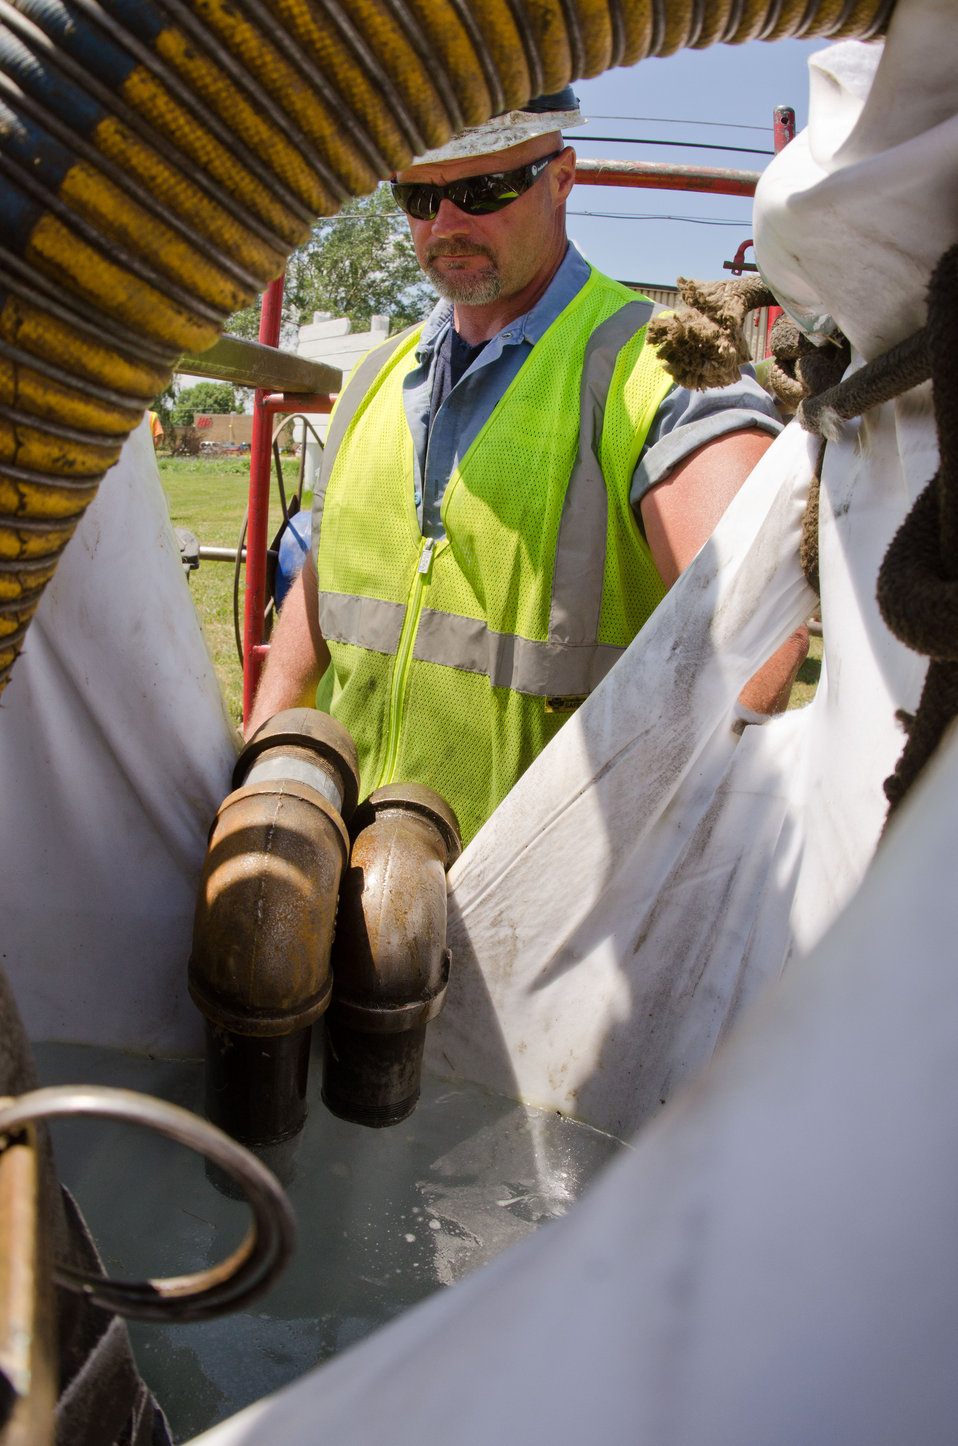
Insituform’s Mack Meher checks the water flow that fills the white resin impregnated fabric lining that goes down the manhole here, and through the existing 50 year old sanitary sewer pipe, to the next manhole, on Tuesday, July 19, 2011; part of Buena Vista Township Phase II Sewer Project, in Michigan, where the United States Department of Agriculture funded the refurbishment and rehabilitation of 45,500 linear feet of defective sewer pipe, and more than 200 manholes; on Tuesday, July 19, 2011. The project includes the construction of an off-site excess flow basin; construction of a pump station; and improvements at the wastewater treatment plant. The system will serve 2,349 residential and 177 commercial customers and will bring the township into compliance with environmental regulations regarding pollutant discharges.
Inspections revealed that the 1960s sanitary sewer system had inflow from storm and rainwater systems and overflowed into the sanitary sewer system. Infiltration was found in the form of cracks, and other failures that allowed groundwater to enter. Rather than digging up the old system, rehabilitation with a cured-in-place-pipe (CIPP) method was chosen. This provides up to a 50% savings and the liner is projected to last 50-100 years. CIPP repair of the 8-30” diameter pipes involves pulling a resin-saturated fabric liner through a damaged pipe, which is then cured with steam or hot water to form a tight-fitting, joint less replacement pipe. Trenchless repair methods require less digging than traditional “dig and replace” repair methods and minimize damage to yards and landscaping. There are two of these teams and one manhole rehabilitation to seal the underground casting frame or brick structure. They process 600-800 feet per day.
Wade Trim Inc. Professional Engineer Tiffany Harrison said about working with the United States Department of Agriculture’s Rural Development “It was very easy, they make it very straight forward, in what paperwork they need. They were always available for questions.
USDA Rural Development has funded water and sewer projects in 117 Michigan communities serving more than 94,000 customers.
Senior Advisor to the Secretary of Agriculture Doug O’Brien said, “America will win the future by out-building, out-educating and out-innovating the world,” O'Brien said. “The Obama Administration is committed to the residents and business owners of Buena Vista Township in building the infrastructure needed to protect our environment and ensure clean water for future generations.” Being almost entirely surrounded by the Great Lakes, Michigan residents know that a small problem upstream usually leads to much bigger problems downstream and that the impact of water pollution extends far beyond the immediate community.